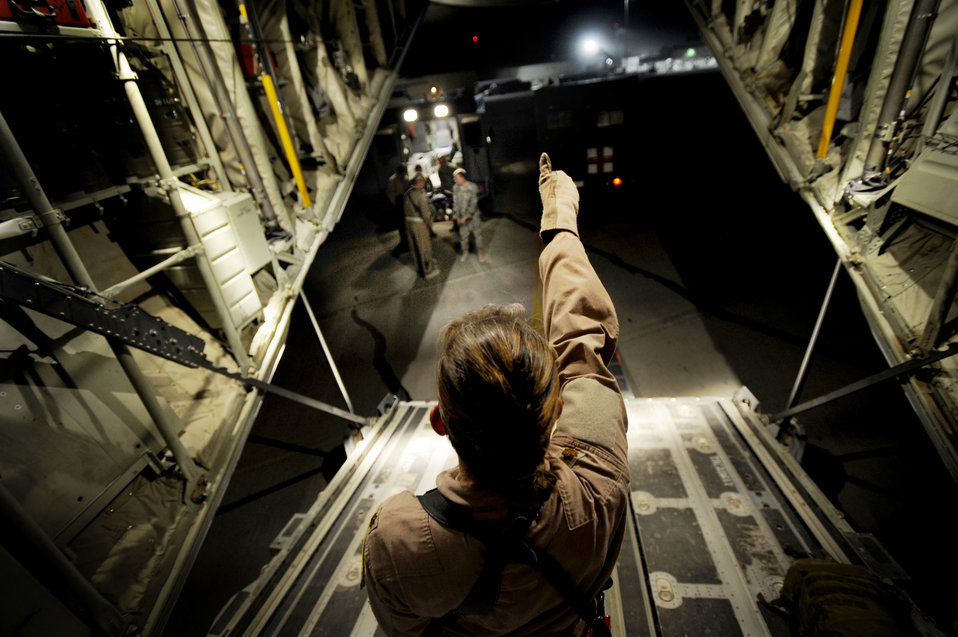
Flying hospital staff gives wounded fighting chance

Maj. Missy Steckler directs the transport of patients from an ambulance to the cargo bay of a C-130J Super Hercules July 19 at Kandahar Airfield, Afghanistan. Major Steckler is a flight nurse with the 451st Expeditionary Aeromedical Evacuation Flight.